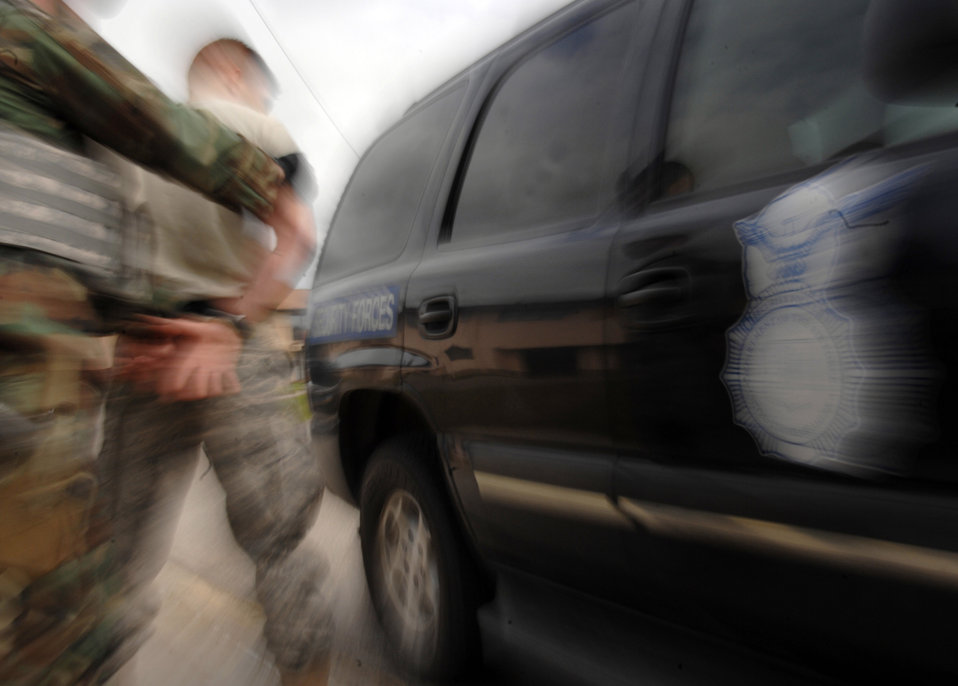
Special Emergency Response

Security forces special emergency response team members respond during a counter-terrorism exercise June 9 at Eielson Air Force Base, Alaska. The SERT members train to stay current on the policies and procedures involving hostage retrieval, barricaded subjects and counter-terrorism. SERT is the Air Force Security Forces equivalent to civilian police forces SWAT team.